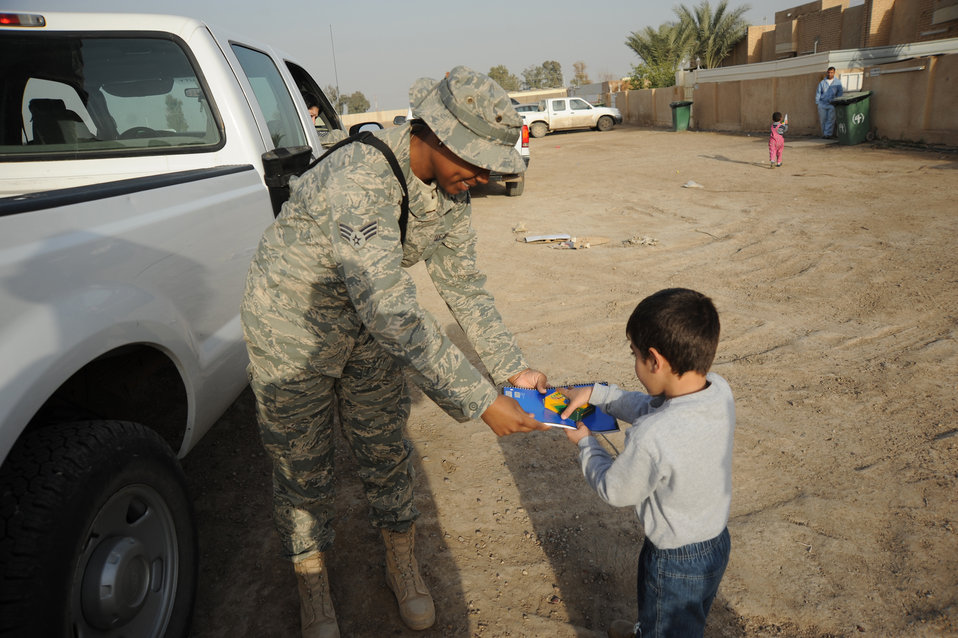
Servicemembers donate items to Iraqi neighbors

Senior Airman Brena Wilkerson gives an Iraqi boy paper and crayons while volunteering with the Good Neighbor Program Jan. 29, 2010. Airman Wilkerson is assigned to the 447th Expeditionary Communications Squadron.